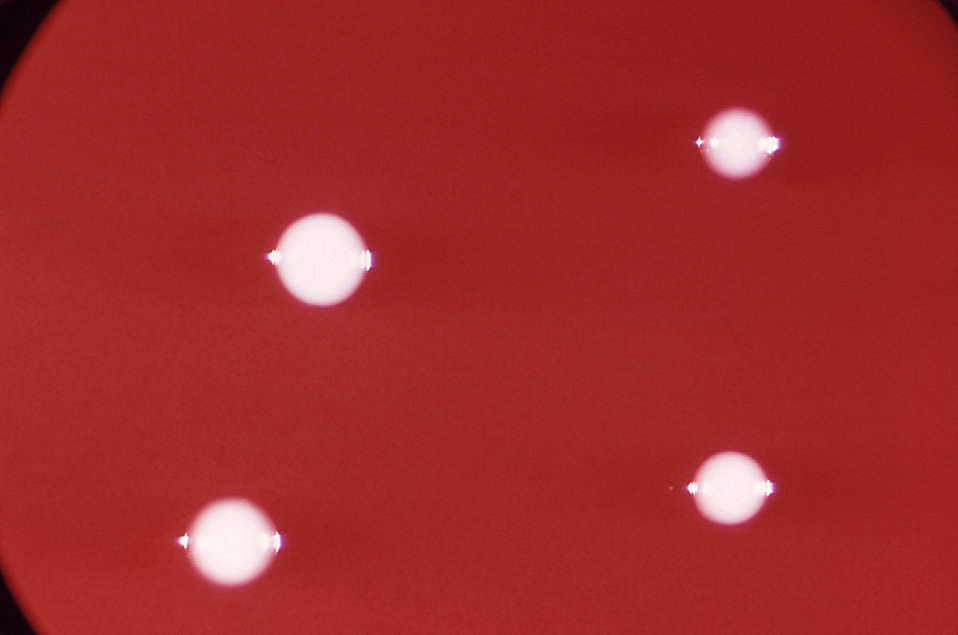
After 72 hours of growth, and under a relatively low magnification of 7.5X, this blood agar plate (BAP) produced colonies of Propionibacterium acnes bacteria.